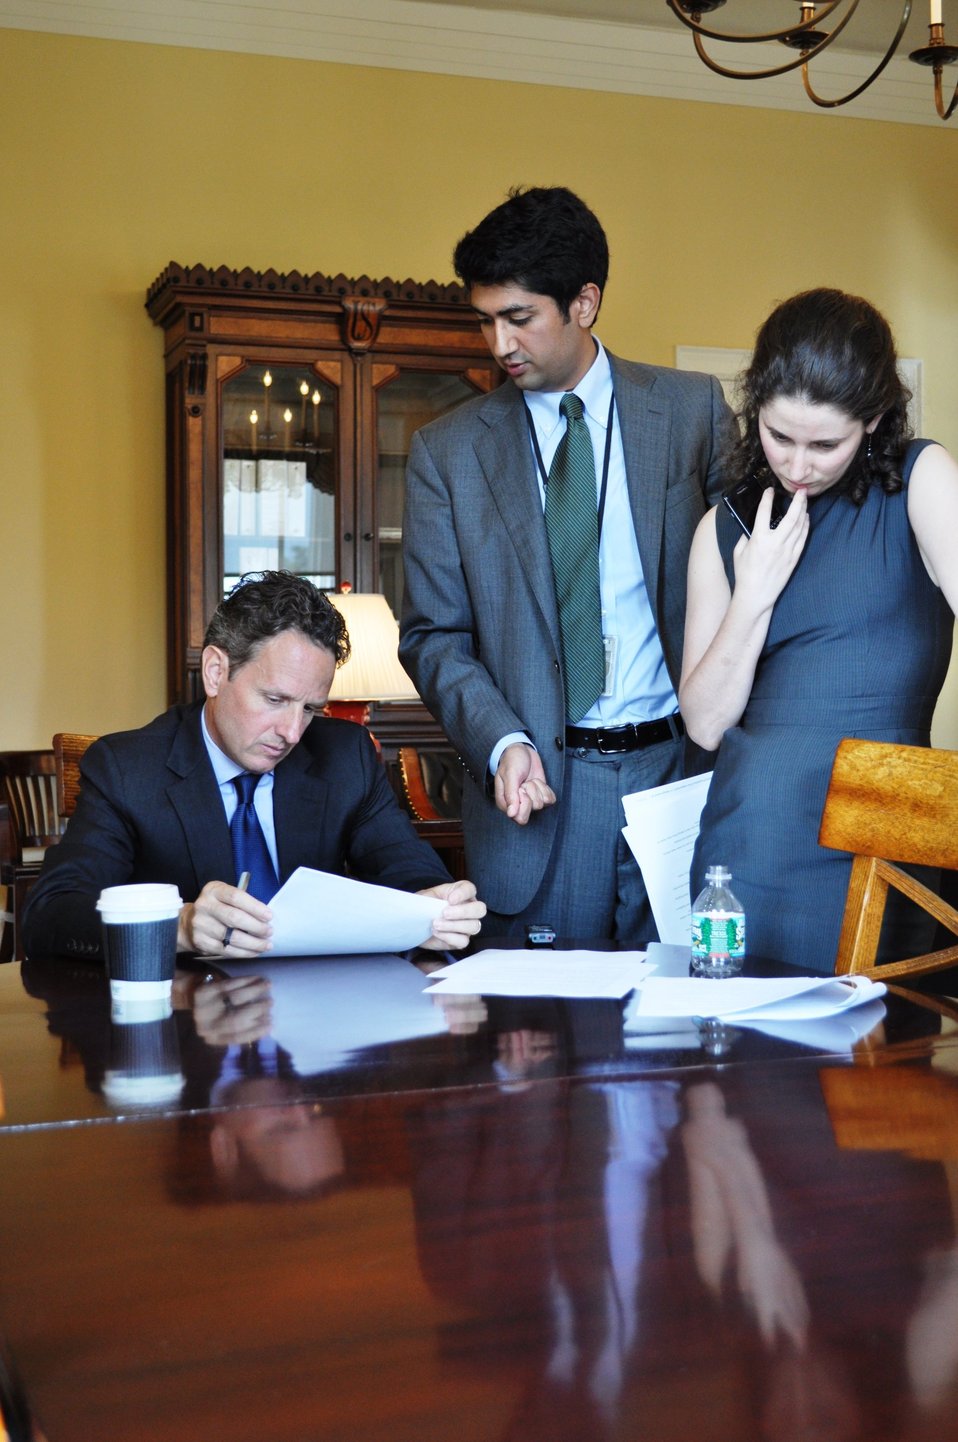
Passage of Financial Reform, 07/15/10

Treasury Secretary Tim Geithner reviews remarks with Speechwriter Aneesh Raman and Treasury aide Sara Aviel moments before the Senate voted to pass the 'Wall Street Reform and Consumer Protection Act.'